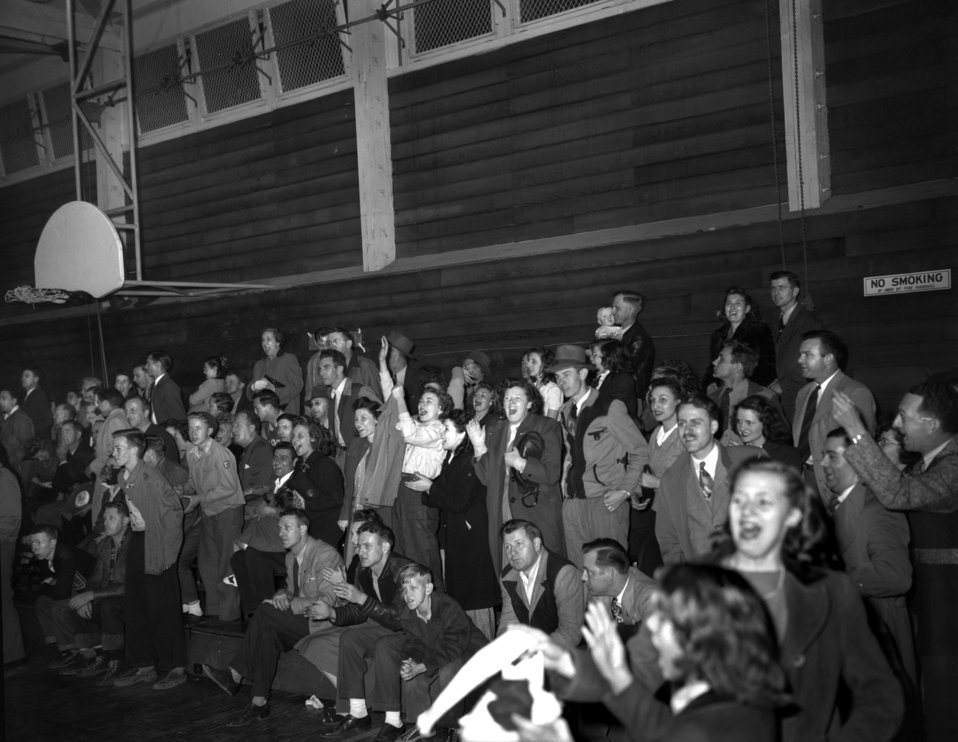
Basketball Crowd Scene Oak Ridge

3353-1 DOE photo Ed Westcott 3-20-1947 Oak Ridge Tennessee